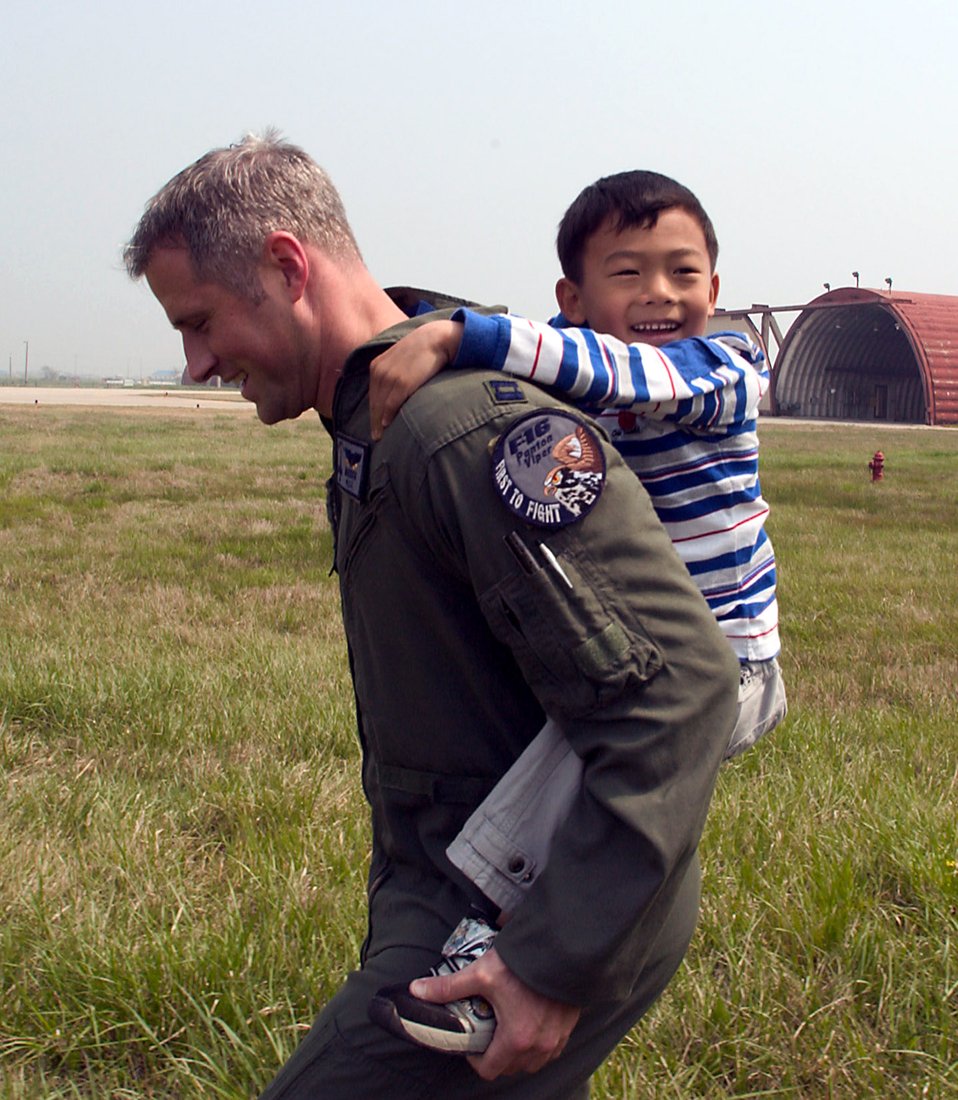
Korean orphans visit Kunsan Airmen

Capt. Tom Still gives a piggyback ride to a child from the Gunsan City orphanage April 27 at Kunsan Air Base, South Korea. Airmen from the 35th Fighter Squadron hosted the orphanage as part of the 8th Fighter Wing's Good Neighbor Program. The 35th FS is one of two F-16 Fighting Falcon squadrons assigned to the 8th Fighter Wing. Captain Still is a fighter pilot assigned to the 35th FS.